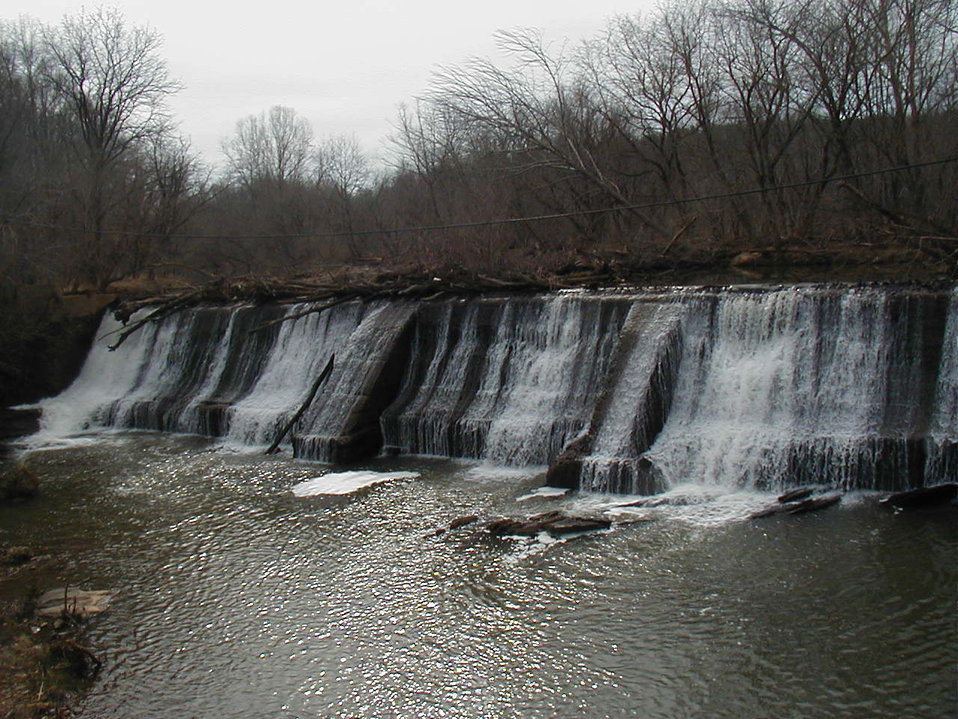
Power dam on the Pigg River just outside the Town of Rocky Mount in Franklin County, Virginia.